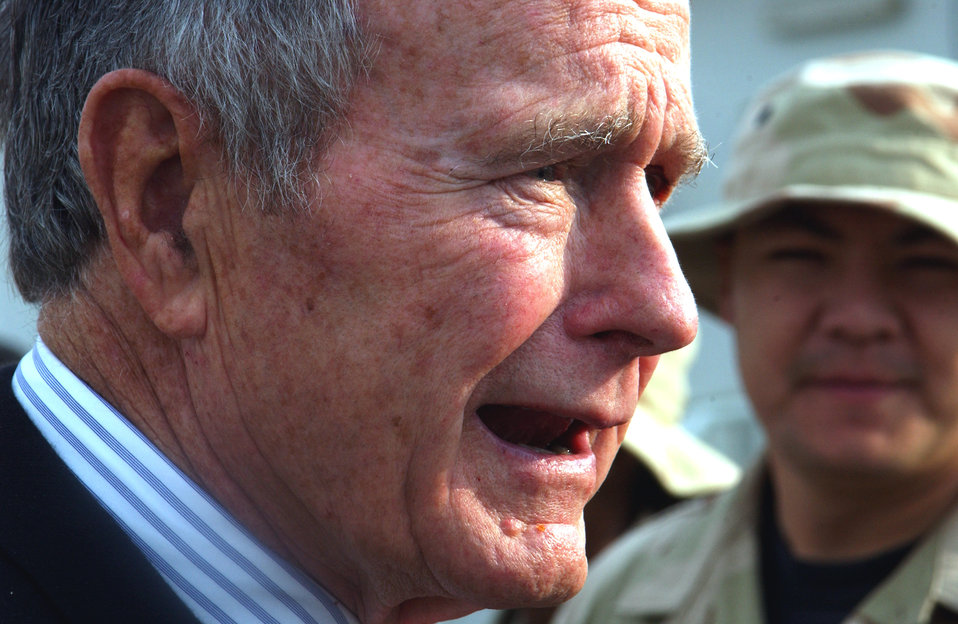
Former president visits Airmen

Former President of the United States George H.W. Bush talks with Airmen Nov. 20 during a visit to the 380th Air Expeditionary Wing in Southwest Asia. President Bush stopped by the wing to listen to a mission briefing and meet the Airmen assigned here.